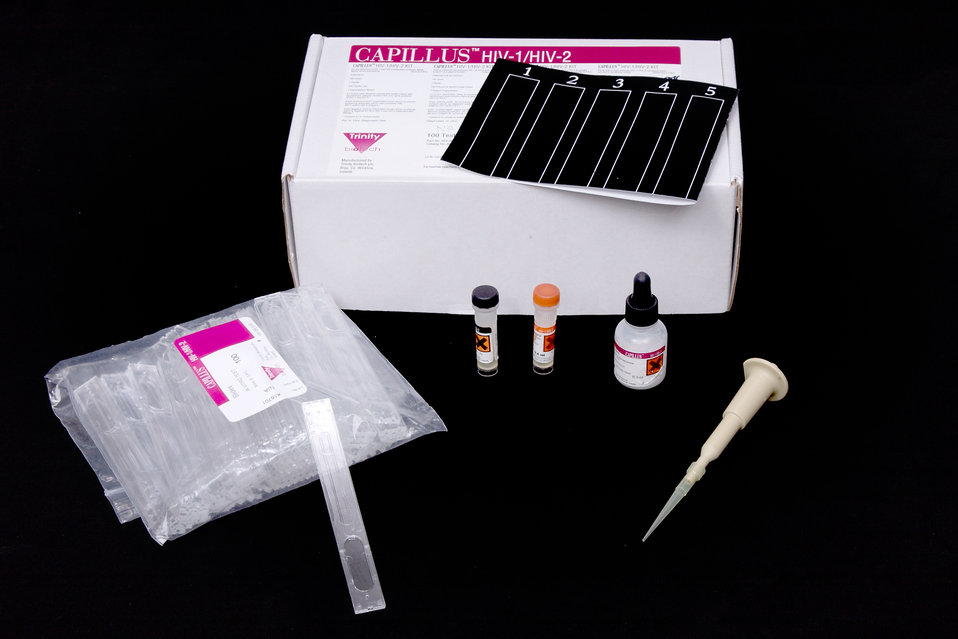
This is the contents of the CAPILLUS� HIV-1/HIV-2 Rapid Test Kit that tests whole blood, serum, or plasma. (Step 1 of 12)